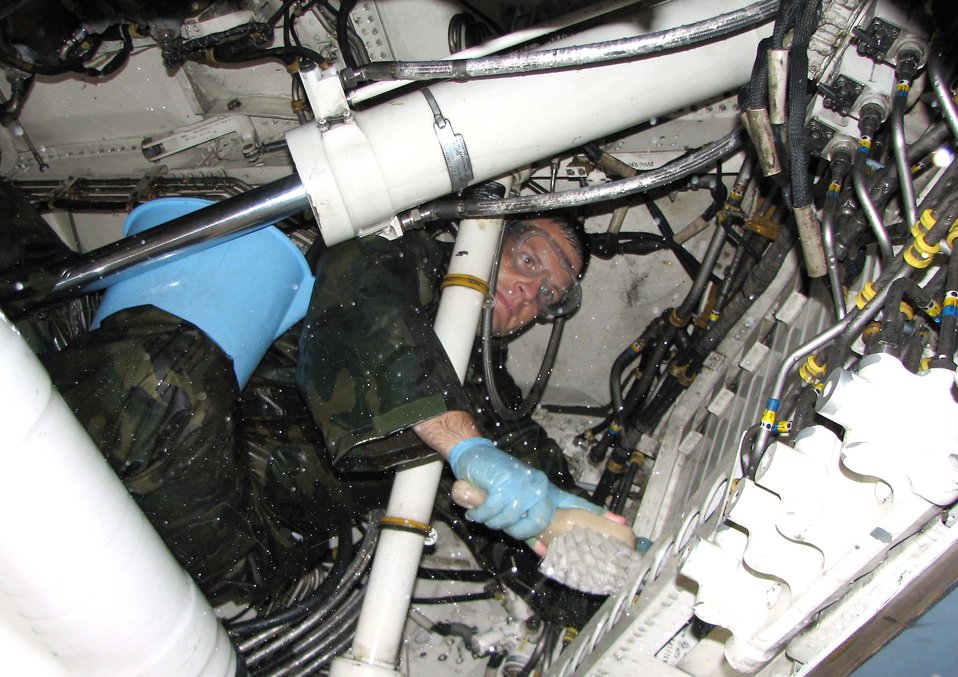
Somebody's gotta do it

Capt. James Temple sends soap and water everywhere as he scrubs the inside of a B-2 Spirit landing gear well at Andersen Air Force Base, Guam, on Aug. 11. Airmen from the 36th Expeditionary Aircraft Maintenance Squadron and 13th Expeditionary Bomb Squadron took part in the wash. A full wash of the aircraft is required every 30 days. It takes approximately 24 hours to wash a B-2, and a special concentration of soap is used, different from any other aircraft. Captain Temple is with the 393rd Aircraft Maintenance Unit.